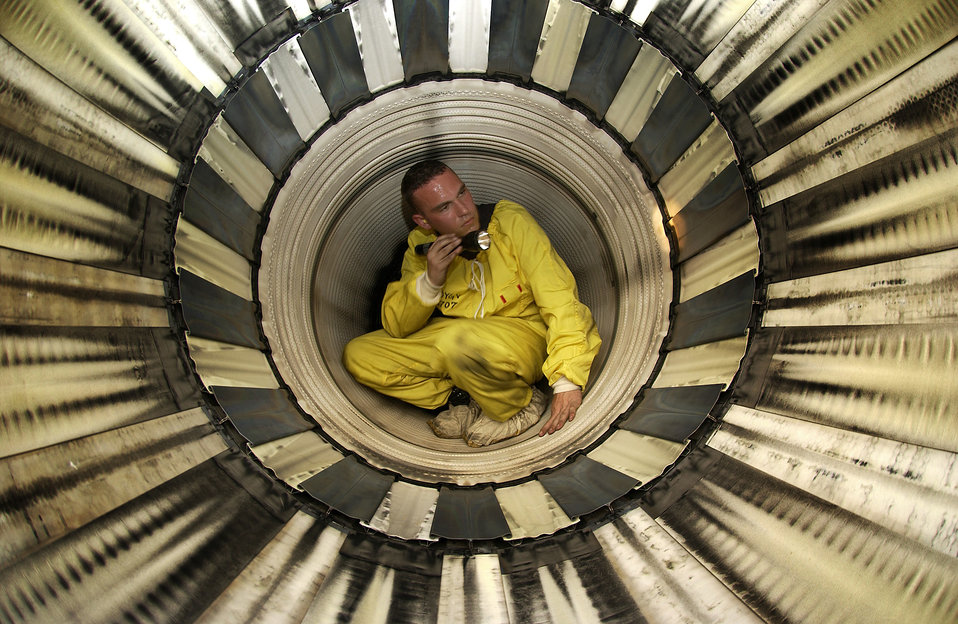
Exhausting work

TYNDALL AIR FORCE BASE, Fla. -- Senior Airman Nick Hofmann inspects an F-15 Eagle exhaust system during William Tell 2004 here Nov. 10. Airman Hofmann is from the 493rd Fighter Squadron at Royal Air Force Lakenheath, England. This is the 50th anniversary of the William Tell competition that tests an aircrew's ability to perform under combat conditions.